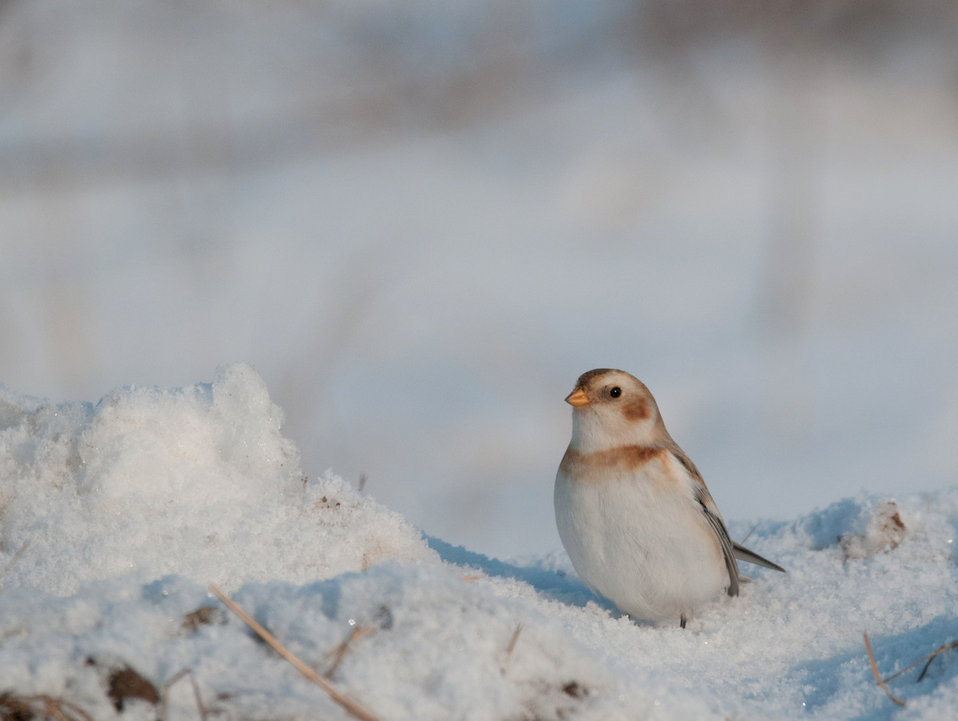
Snow bunting chilling in the snow.